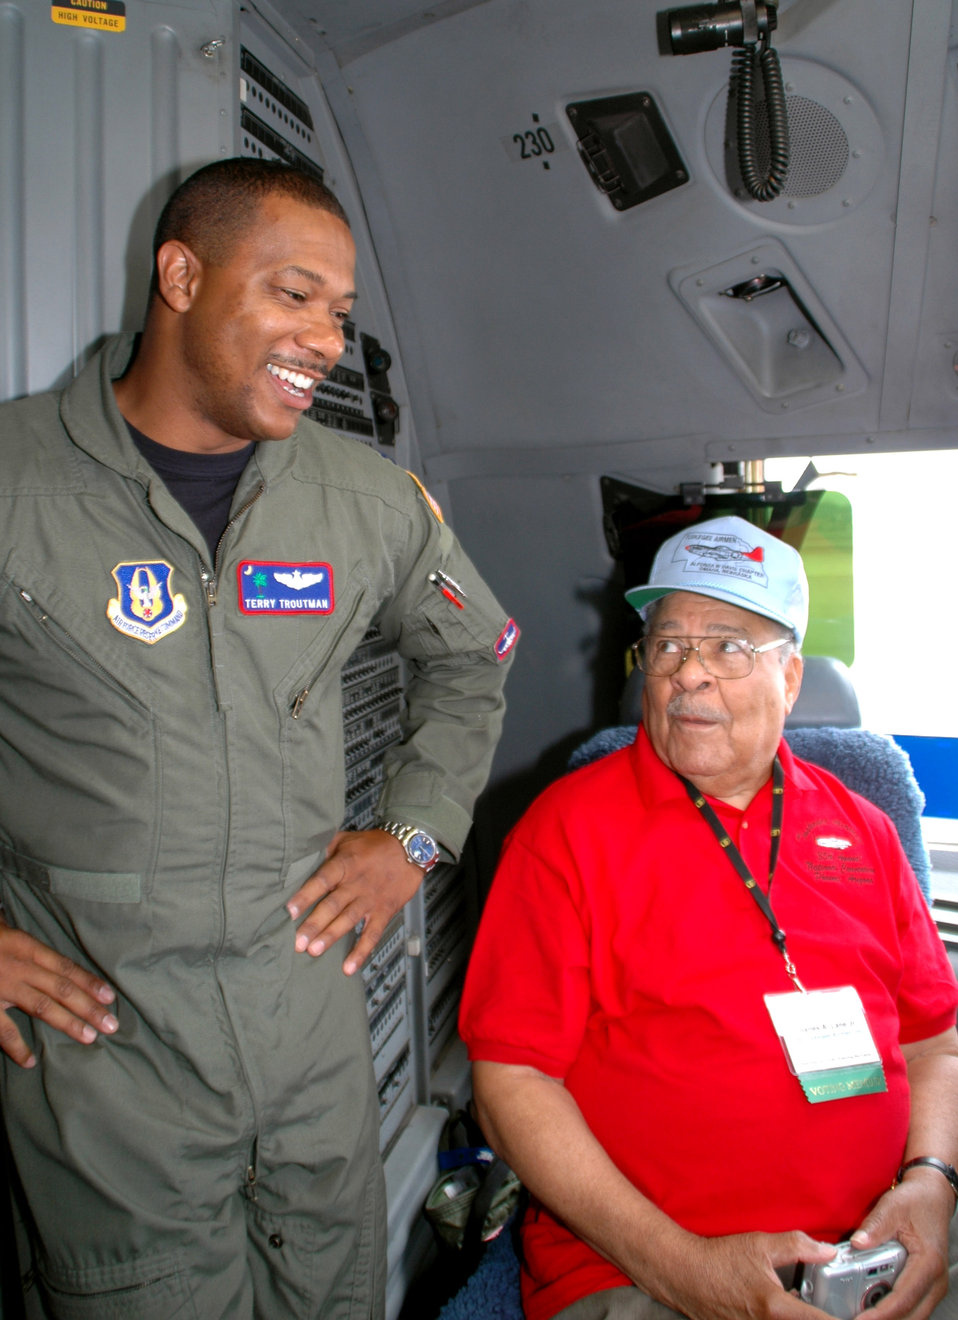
History comes full circle for black aviators

Capt. Terry Troutman talks with 81-year-old Charles Lane, an original Tuskegee Airman, as they sit in the flight deck of a C-17 Globemaster III prior to an orientation flight on Aug. 5. The original Tuskegee Airmen were given the orientation flight by an all black aircrew as part of the 2006 Tuskegee Airman Convention in Phoenix. Captain Troutman is a reservist assigned to the 701st Airlift Squadron at Charleston Air Force Base, S.C.